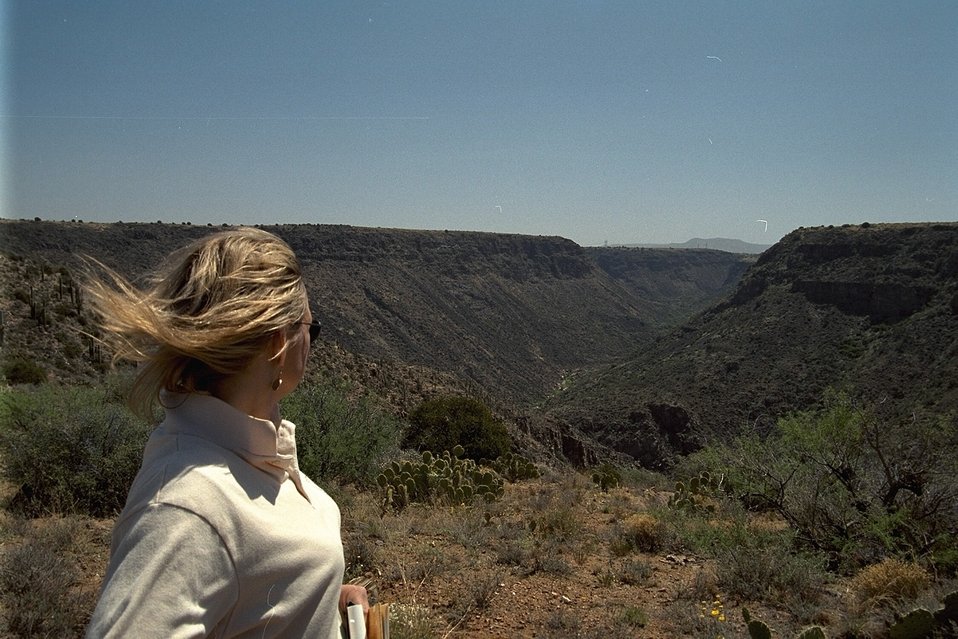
A BLM Employee surveys the beauty of the Agua Fria Canyon.